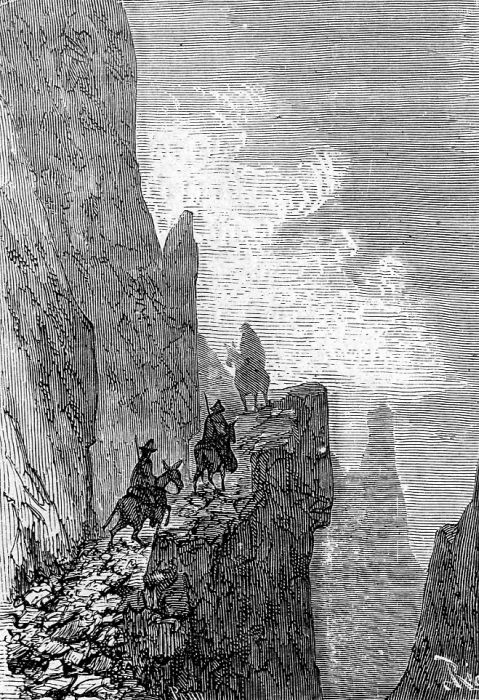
An ilustration from the novel 'In Search of the Castaways; or Captain Grant's Children' by Jules Verne drawn by Édouard Riou. Polski: Ilustracja powieści Juliusza Verne'a 'Dzieci kapitana Granta' autorstwa Édouarda Riou. Français : 'Les Enfants du capitaine Grant', Édouard Riou.